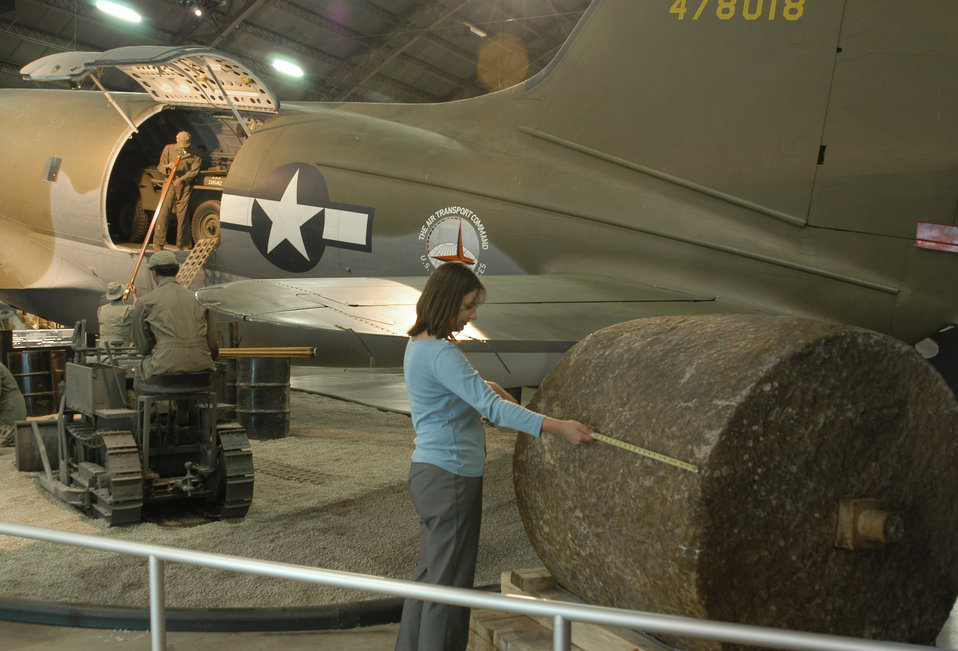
Museum receives 11,000-pound stone roller from China

DAYTON, Ohio -- U.S. Air Force Museum technician Roberta Carothers measures a recently donated stone roller before its display in the museum's air power gallery. The stone roller was used to compress gravel for runways as long as 8,500 feet in Kunming, China. The runways were used by the Flying Tigers and other aircraft during World War II.